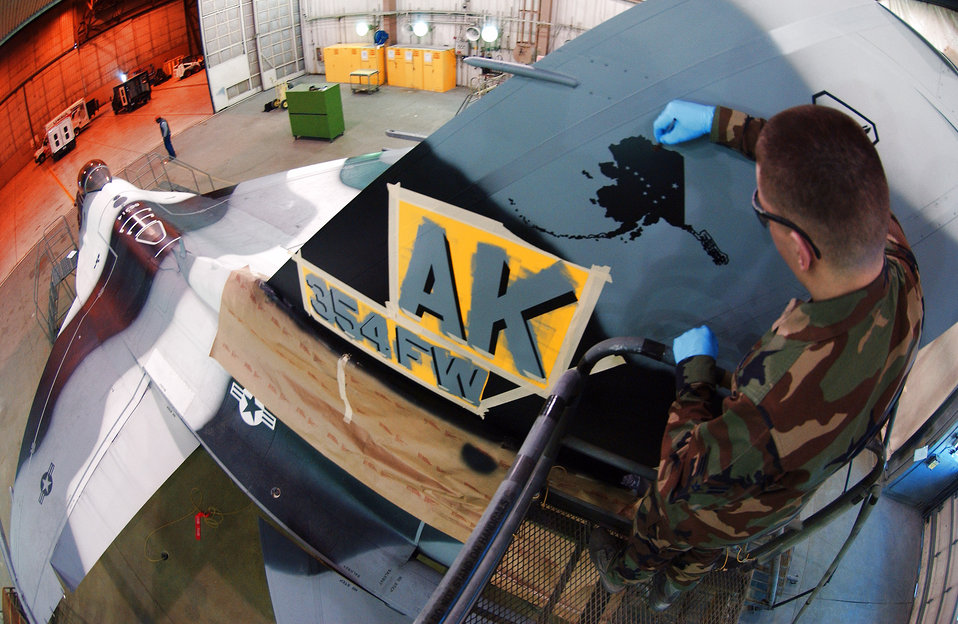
Aggressor fleet paint scheme nears completion

Airman 1st Class Daniel Herbert applies the finishing touches to the state of Alaska stencil design on the tail March 26 at Eielson Air Force Base, Alaska. Airmen in the sheet metal shop work on stenciling the flag ship tail with unique markings setting it apart from other aggressor aircraft from the 18th Aggressor Squadron.